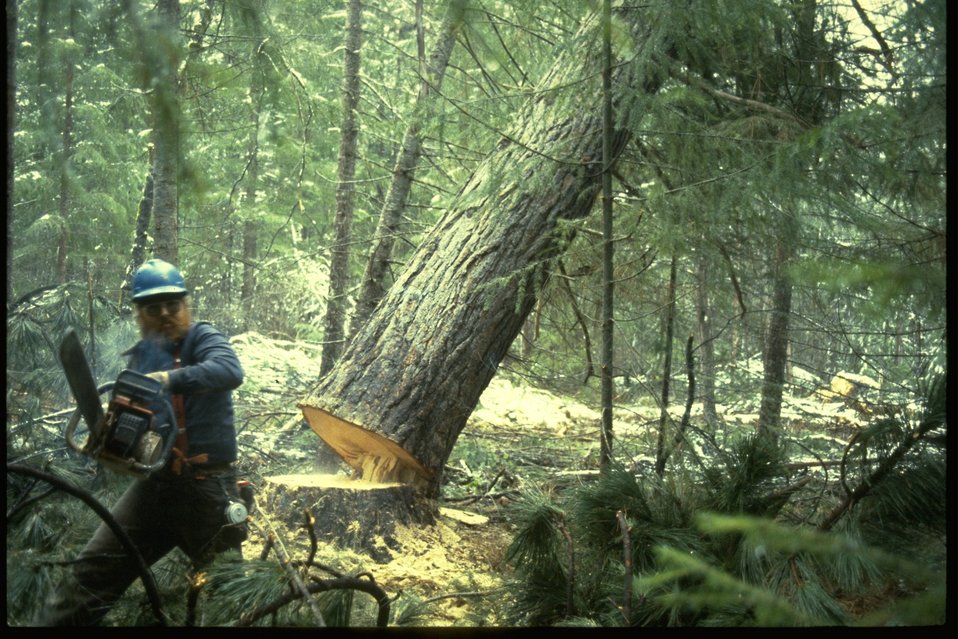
Logger felling a tree.